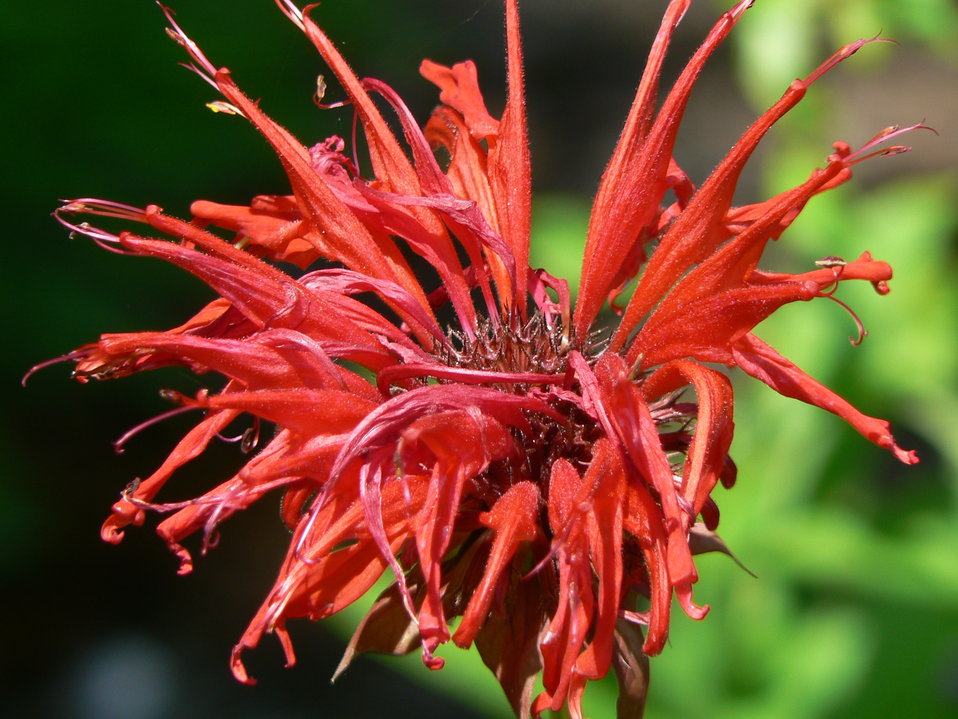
Monarda at Cape May National Wildlife Refuge.